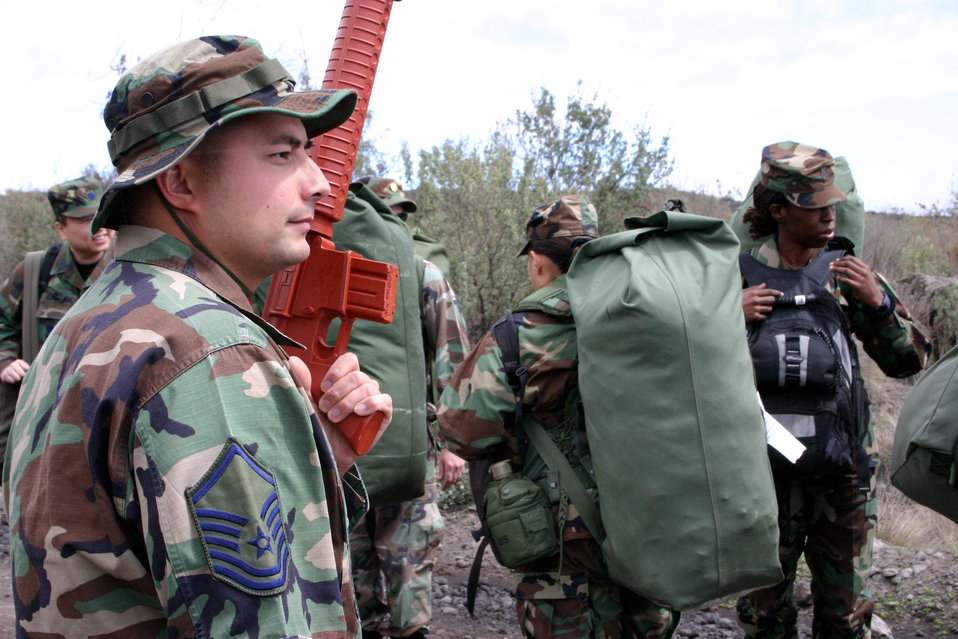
Pacific Joint Legal Exercise

Master Sgt. Daniel Kazumura stands alongside participants in this year's Pacific Joint Legal Exercise on Sunday, March 5, 2006. The Pacific Air Forces exercise provides legal professionals with realistic deployment training. Nearly 30 U.S. active duty, Guard and Reserve legal professionals and one Canadian officer endure a week of austere conditions as well as classroom and scenario-driven lessons at the Pohakuloa Training Area, Hawaii. Sergeant Kazumura is the noncommissioned officer in charge of operations and readiness, Pacific Air Forces judge advocate office.